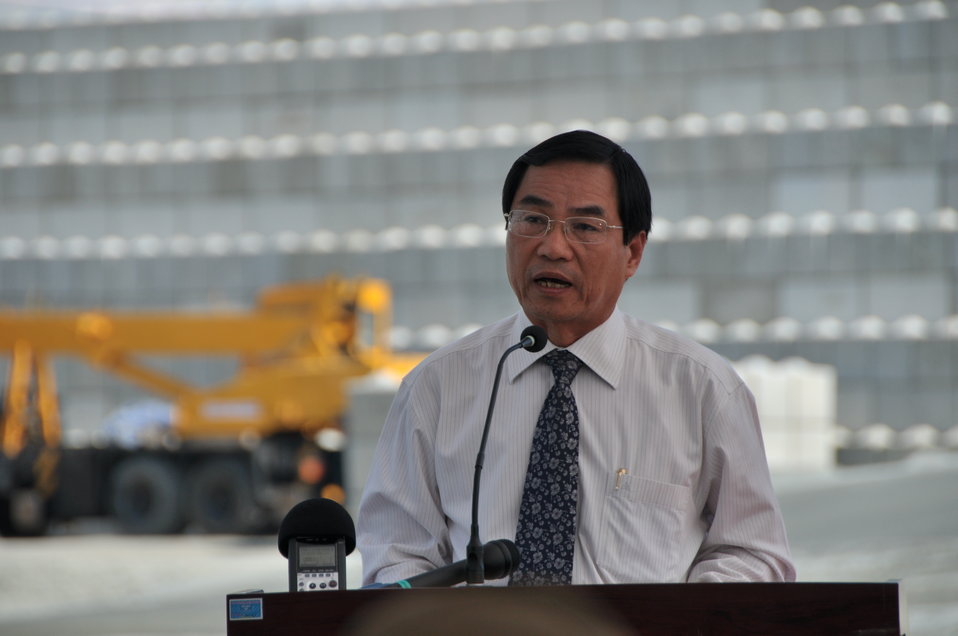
Media Tour of Environmental Remediation of Dioxin Contamination at Danang Airport

Mr. Phung Tan Viet, Vice Chairman of the Danang People's Committee, addresses the media.

Danang, Vietnam
April 24, 2013